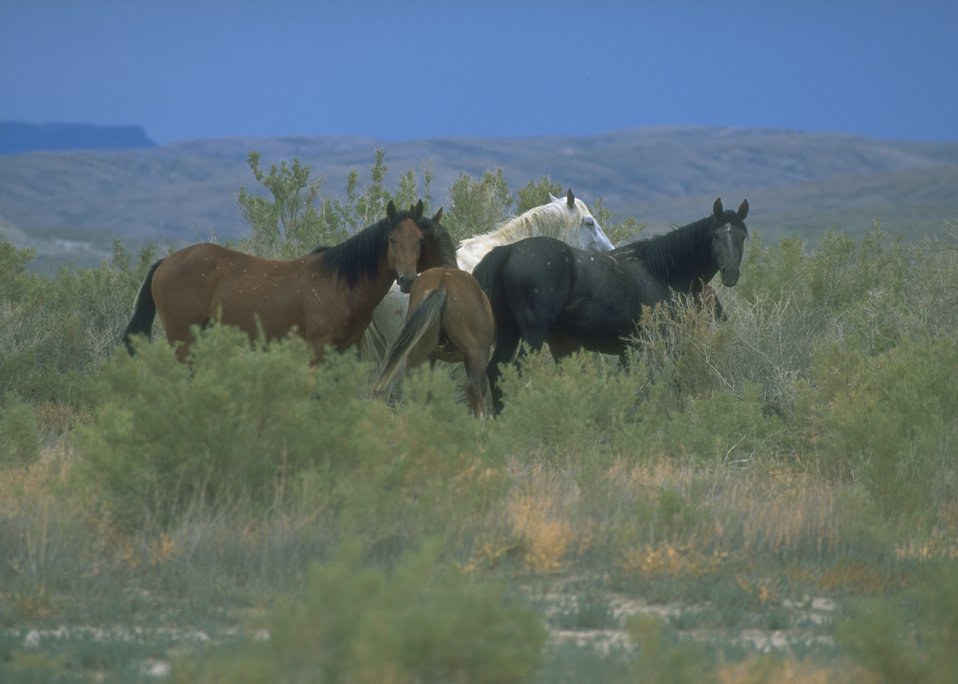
Wild horses, Rock Springs Field Office.